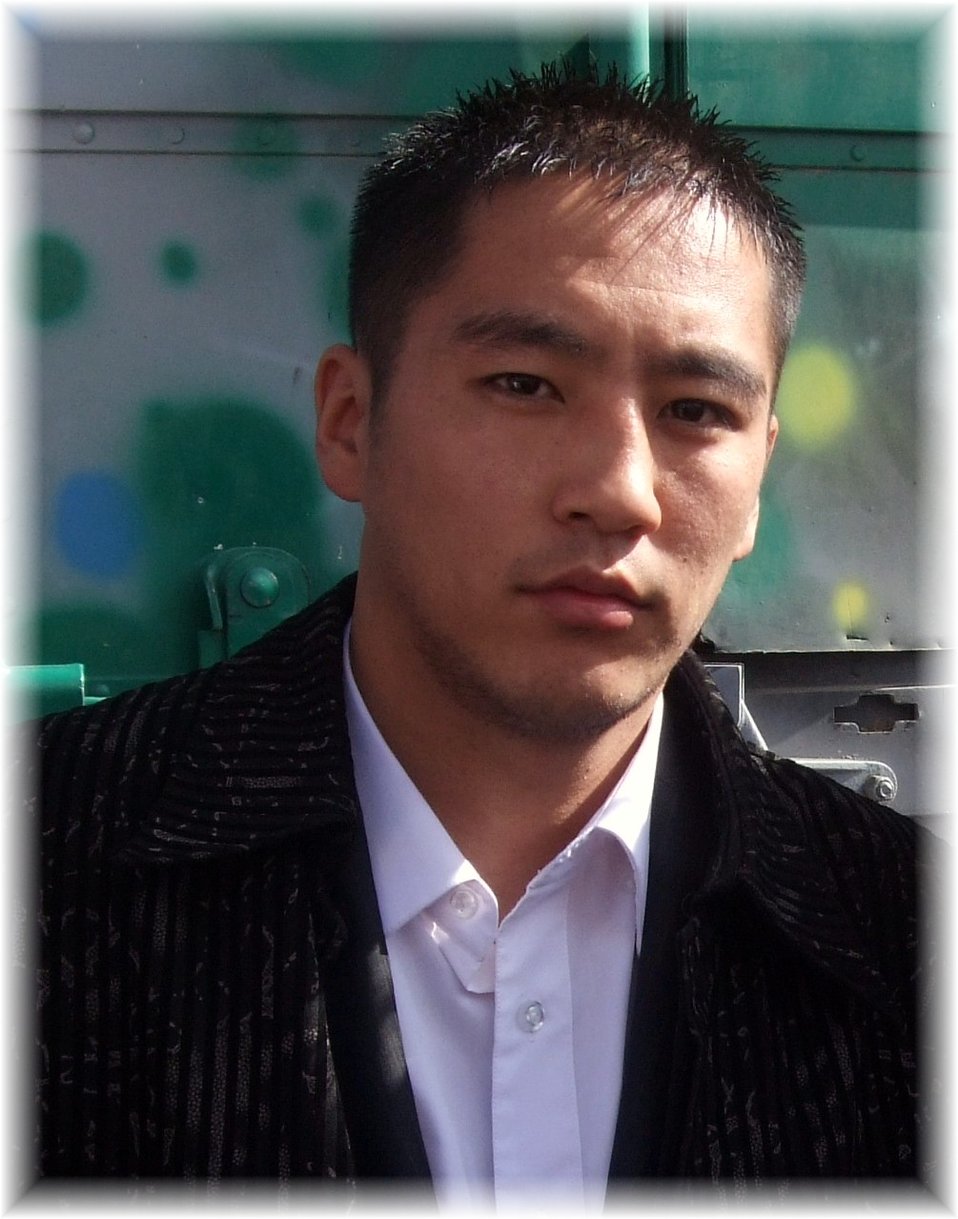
Enkhbatyn Badar-Uugan, Olympic gold medalist